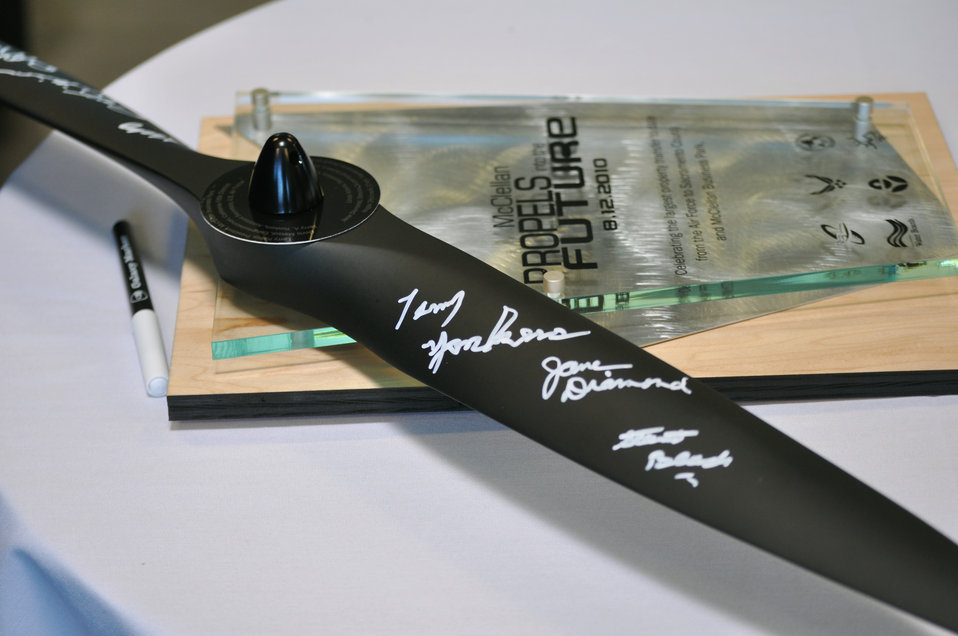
Transfer of land to McClellan Business Park

Official signatures on an aircraft propeller “seal the deal” Aug. 12, 2010, for the transfer of 560 acres from the Air Force to Sacramento County at the former McClellan Air Force Base in Sacramento, Calif. The inscription reads: Celebrating the largest property transfer to date from the Air Force to Sacramento County and McClellan Business Park.